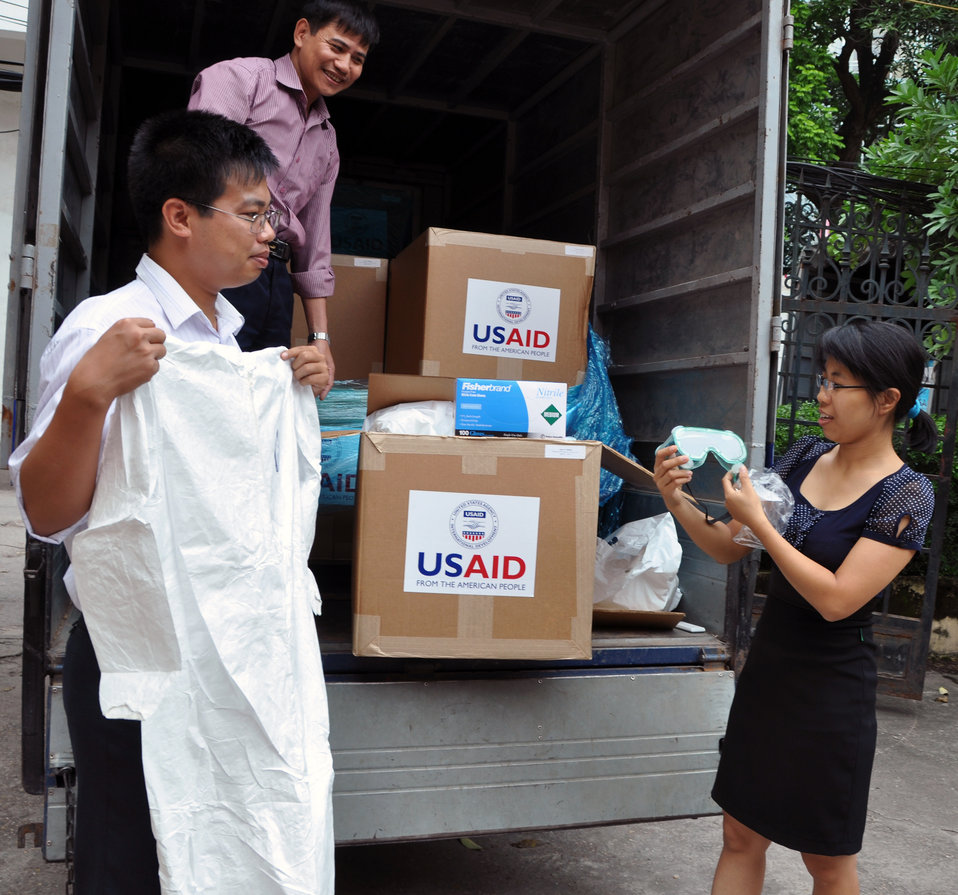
Vietnamese officials inspect personal protective equipment in Hanoi

Nguyen Dug Hanh of Vietnam's Department of Animal Health (on truck), transport supervisor Doan Phu Huyen (left) and Nguyen Thi Thanh Diep inspect a shipment of 1,700 personal protection kits -- suits, masks, gloves, goggles and related items -- in September 2011 before they are shipped to Can Tho, Ha Nam, Hung Yen, Kieng Giang, and Quang Tri provinces to help veterinary officials and animal health workers battle disease outbreaks in the country. Since 2007, USAID has provided over 15,000 protective equipment kits for animal health workers in Vietnam.